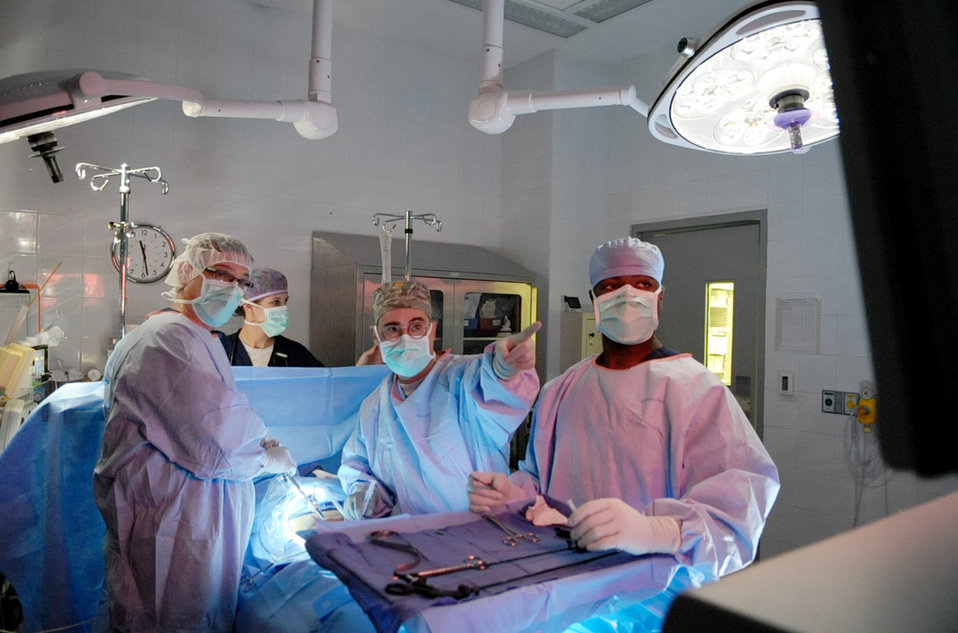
In-theater medcal treatment

Lt. Col. Eric Burdge (second from left) discusses images collected with a laparoscopic camera during hernia surgery, while Col. David Noll and Staff Sgt. Jeron Lowery assist June 9, 2010, at an air base in Southwest Asia. Colonel Burdge is a 379th Expeditionary Medical Group general surgeon. Colonel Noll is a 379th EMDG orthopedic surgeon. Sergeant Lowery is a 379th EMDG surgery technician.